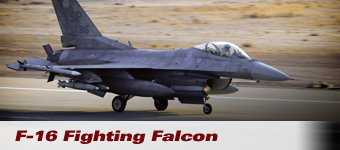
F-16 Fighting Falcon

A F-16 Fighting Falcon lands after completing a mission. The first F-16 was delivered to the Air Force in 1979.